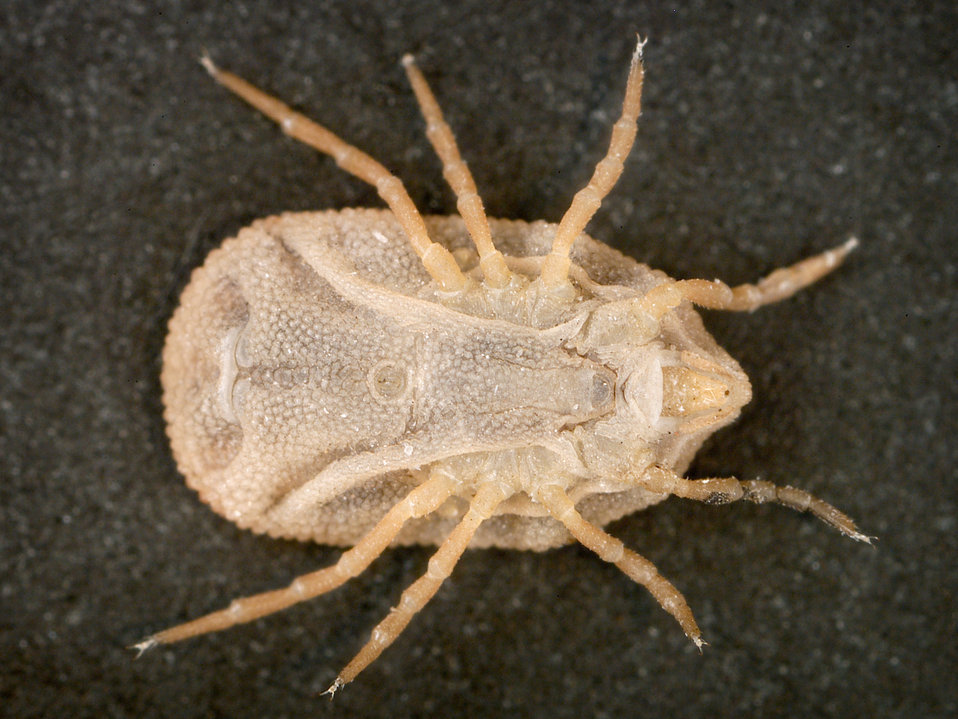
This is a ventral view of the 'soft tick' Carios kelleyi, formerly Ornithodoros kelleyi, or the 'Bat Tick'.